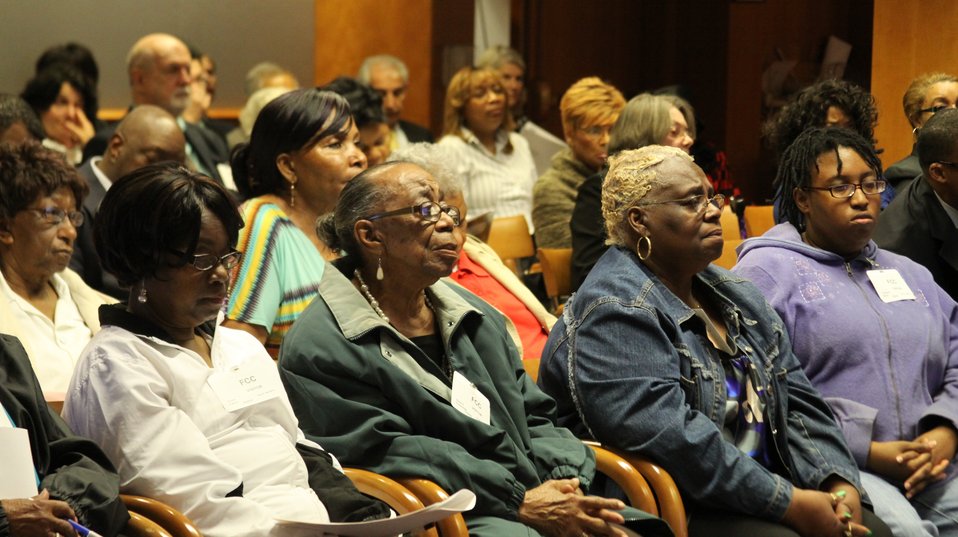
Digital Literacy for Seniors: How the Internet Can Benefit Older Americans, April 24, 2013